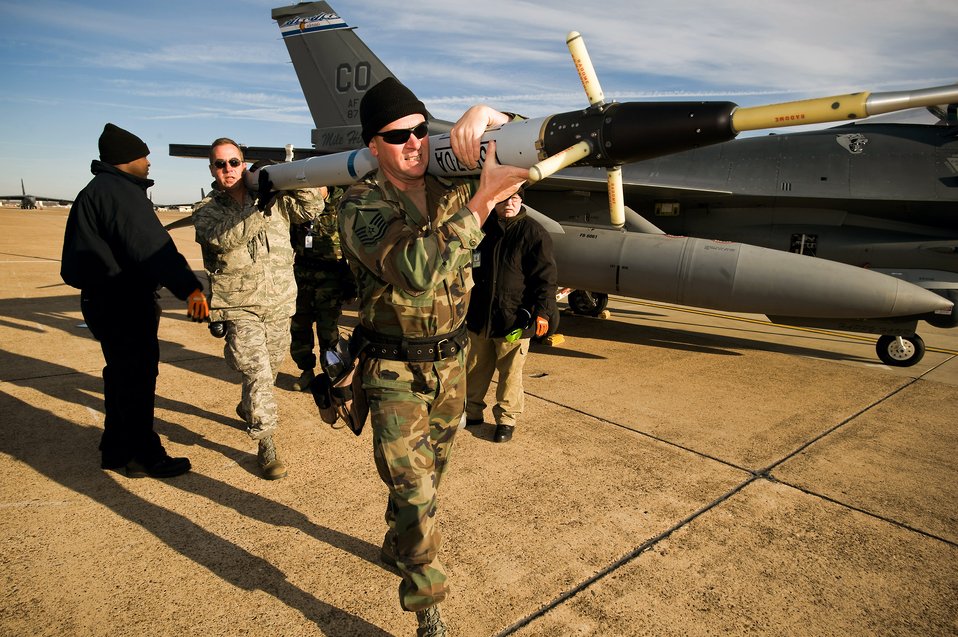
Swap out

Master Sgt. Mark Caton and Senior Master Sgt. Mark Jones swap out an air combat maneuvering instrumentation pod from the wing of an F-16 Fighting Falcon Dec. 5 at Green Flag East at Barksdale Air Force Base, La. The pods are being swapped out for ones with fewer in-flight air hours midway through Green Flag East. Sergeant Caton is a Colorado Air National Guard aircraft armament specialist, and Sergeant Jones is the 140th Maintenance Squadron weapons element NCO in charge from Buckley Air Force Base, Colo.